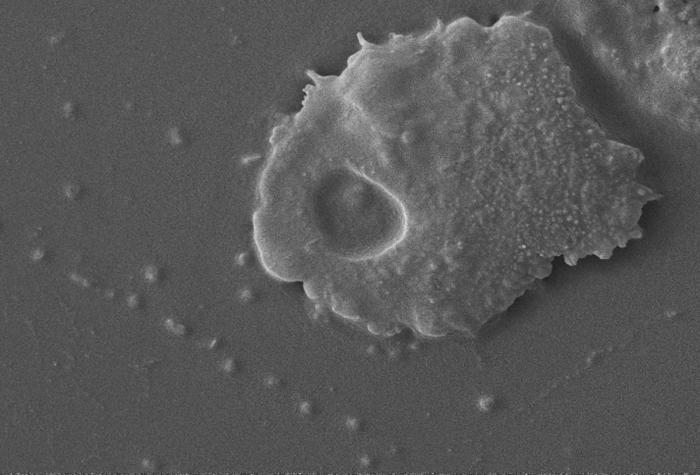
This scanning electron micrograph (SEM) revealed some of the ultrastructural features seen on the surface of an Acanthamoeba polyphaga protozoan. Note the amorphous nature of the organism's exterior from which pseudopodia, from the Latin pseudo = false, and podia = feet, can extend. These pseudopodia enable the amoeba to move about, and grasp objects in its environment.